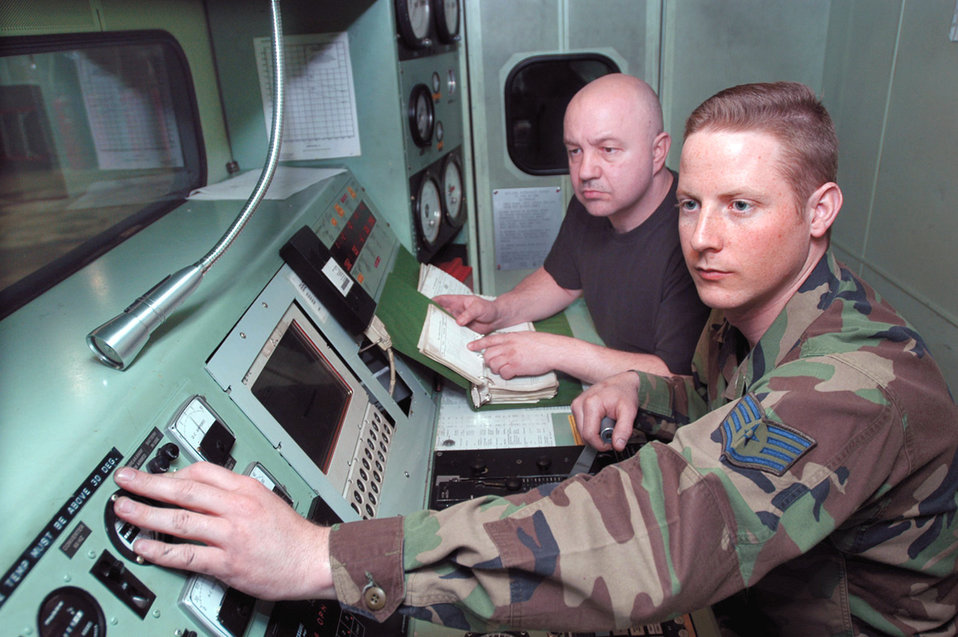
Great IDEA

ELMENDORF AIR FORCE BASE, Alaska -- Staff Sgt. Kevin Jackson (front) and Tech. Sgt. Joe Clinton set up the test booth to prepare for a jet-engine test. Sergeant Jackson earned $10,000 through the Air Force's Innovative Development through Employee Awareness program. He proposed that the hydraulic fluid in certain types of maintenance equipment be changed annually instead of every two months. Both Airmen are assigned to the 3rd Component Maintenance Squadron.